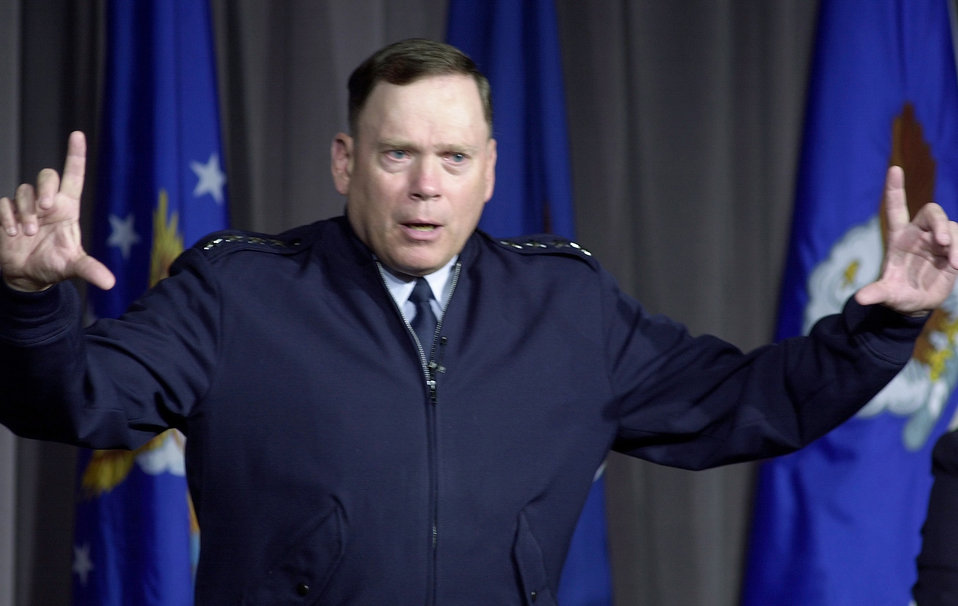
Jumper

WASHINGTON --